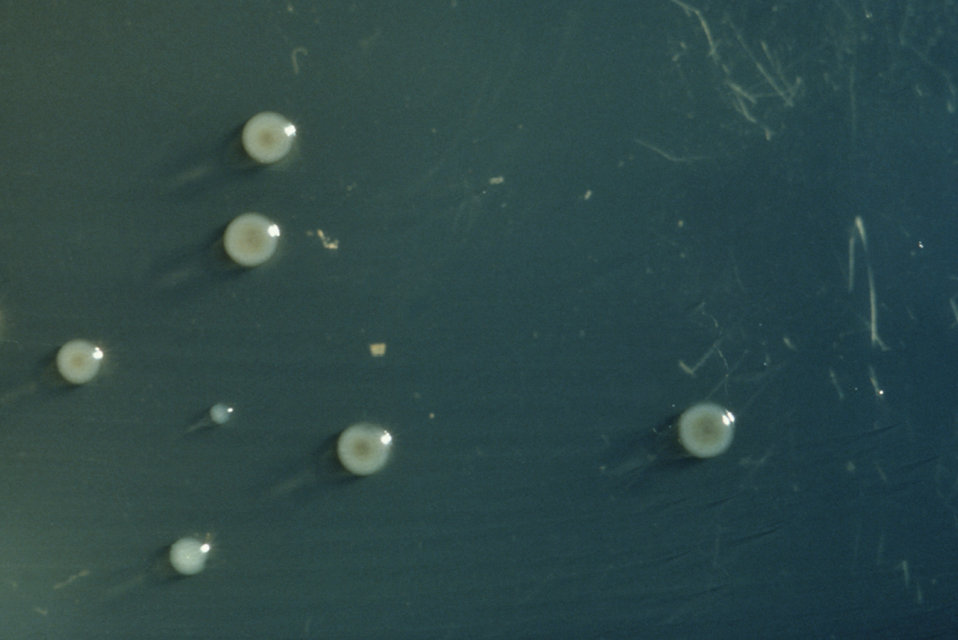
This photograph depicts the colonial growth pattern displayed by Providencia alcalifaciens bacteria cultured on a Hektoen enteric (HE) agar medium; when grown on HE agar, P. alcalifaciens produces colonies very similar to those produced by Shigella spp., which are greenish-blue in color, and appear moist.